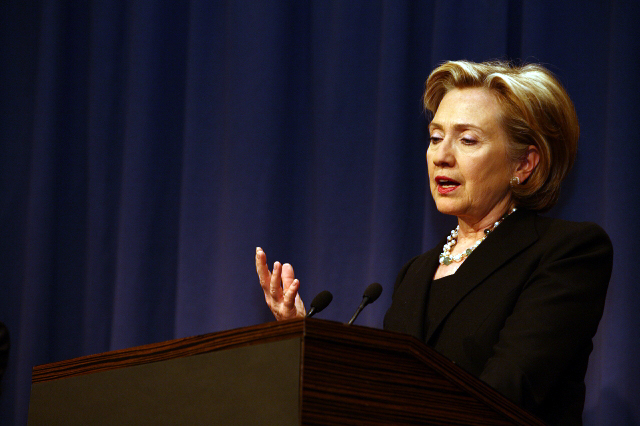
Press Conference With Russian Foreign Minister

Press conference after dinner meeting between U.S. Secretary of State Hillary Rodham Clinton and Russian Foreign Minister Sergey Lavrov in Geneva, Switzerland March 6, 2009.